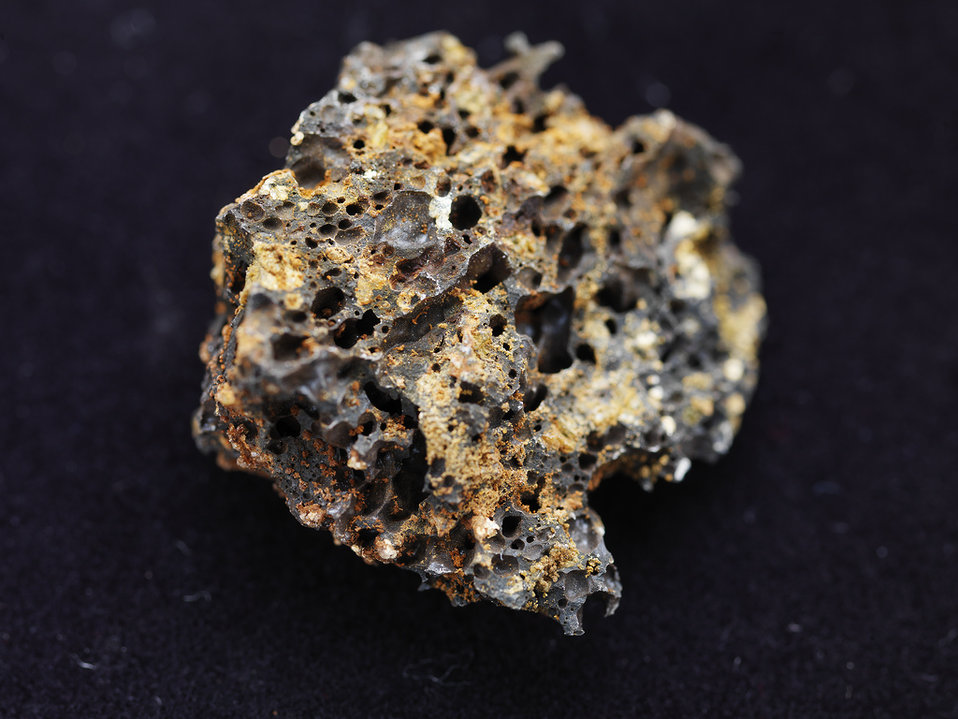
Pacific Northwest National Laboratory addresses carbon emissions that contribute to climate change which has become an international challenge.
One option for reducing greenhouse gas buildup in the atmosphere is storing it deep underground. Lab experiments confirm that carbon dioxide is effectively trapped when injected into basalt formations.